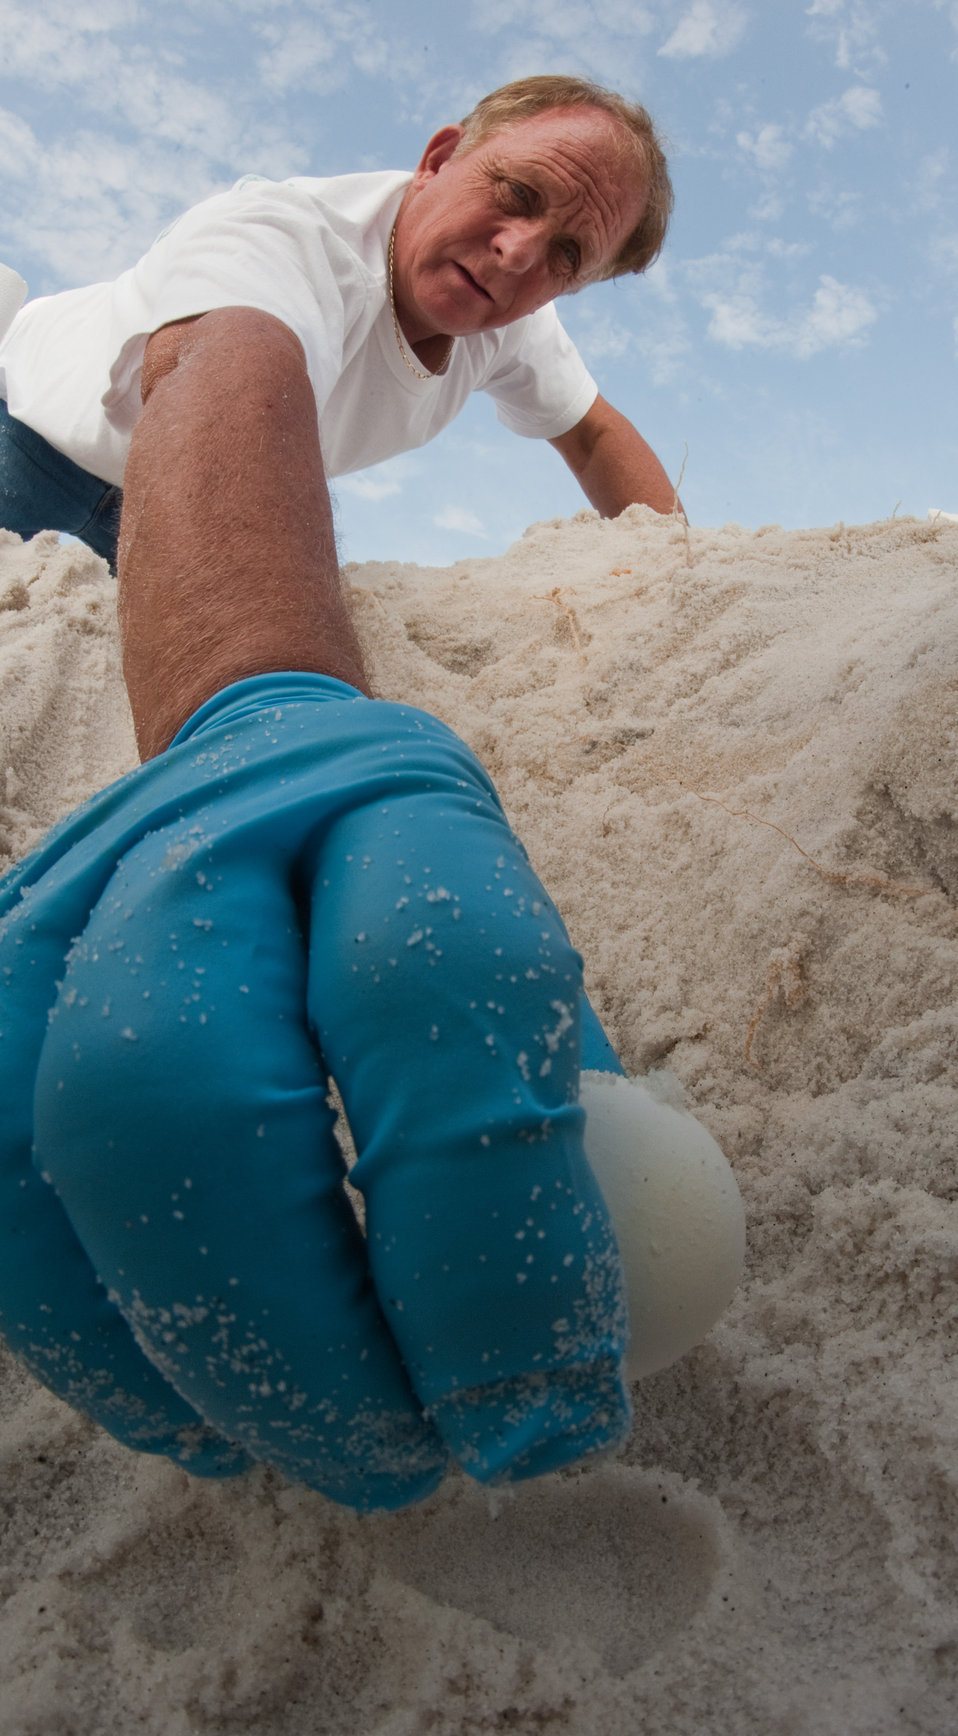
Turtle Eggs avoid Gulf Oil Danger

The honor of lifting the last of 112 Loggerhead sea turtle eggs went to Bob Miller, who carefully packing the eggs into Styrofoam coolers lined with the white sand at Eglin Air Force Base, Florida, on August 9, 2010. Mr. Miller is the Sea Turtle Program Manager with the 96th Civil Engineer Squadron. Because of the critical attachment of the embryo to the inside of the egg shell, the eggs must be gently lifted with out tilting or rotating, the egg. With equal care the transportation to the Atlantic coast is equally critical. At a controlled climate facility, they will be allowed to hatch in the cooler. Wildlife technicians will then release them into the ocean. Bob Miller, a retired Navy EOD diver, an endangered species biologist has for the past 10 years been the Sea Turtle program manager and primary permittee at Eglin Air Force Base, Fla. He has also served as the program manager for the Barrier Island and Gulf of Mexico, U.S. Fish and Wildlife Service, Endangered Species Act, Section 7 Consultation; Coastal Zone Management Act, Marine Mammal Protection Act, and Coastal Barrier Resources Act.